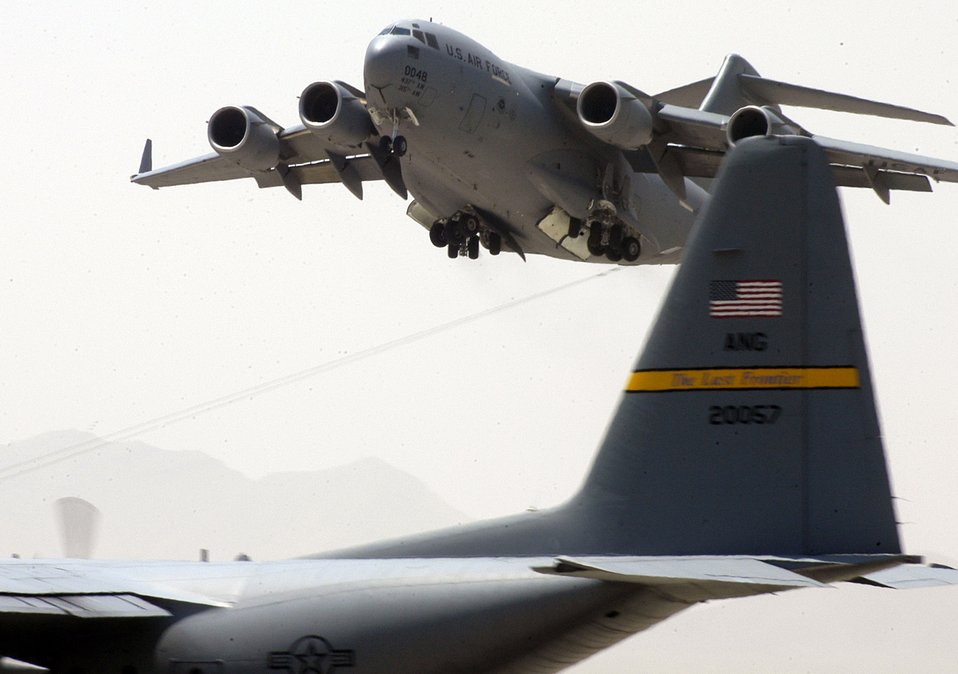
Airlift at Bagram

A C-17 Globemaster III from Charleston Air Force Base, S.C., takes off from Bagram Air Base, Afghanistan, on Tuesday, July 4, while a C-130 Hercules from the Alaska Air National Guard waits to take the runway. Strategic and tactical airlift are the backbone of the logistics efforts for Operation Enduring Freedom in Afghanistan.